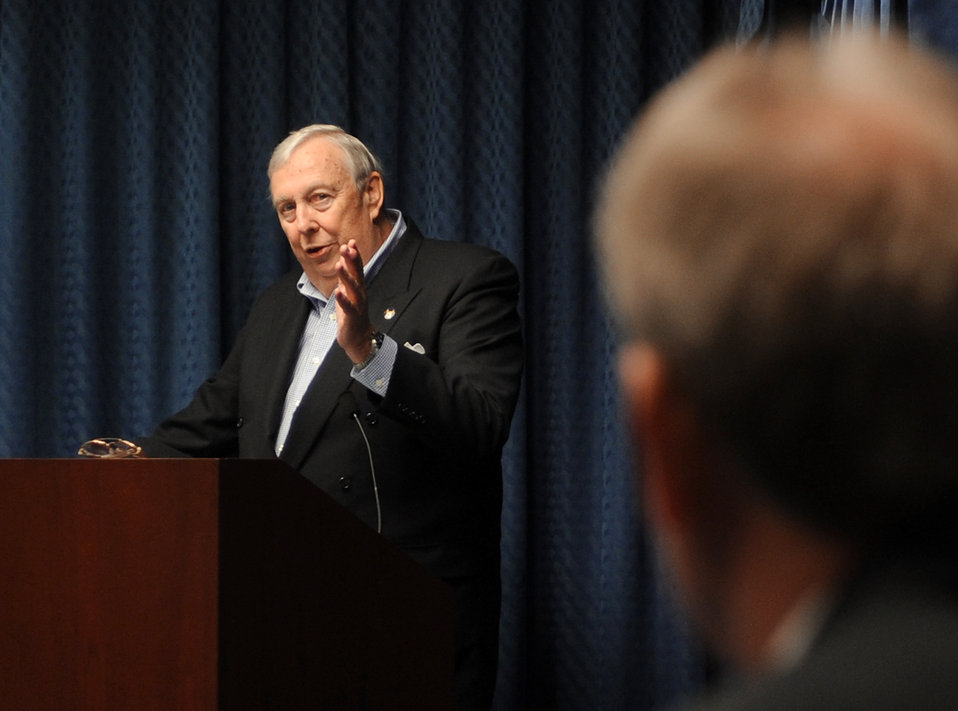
Dr James G. Roche Sustainment Excellence award

Dr. James G. Roche, former Secretary of the Air Force, speaks to attendees during a ceremony presenting an award that bears his name. The Dr. James G. Roche Sustainment Excellence award was prented to William Barnes, deputy chief, B-1 systems program office at Tinker Air Force Base, Okla.